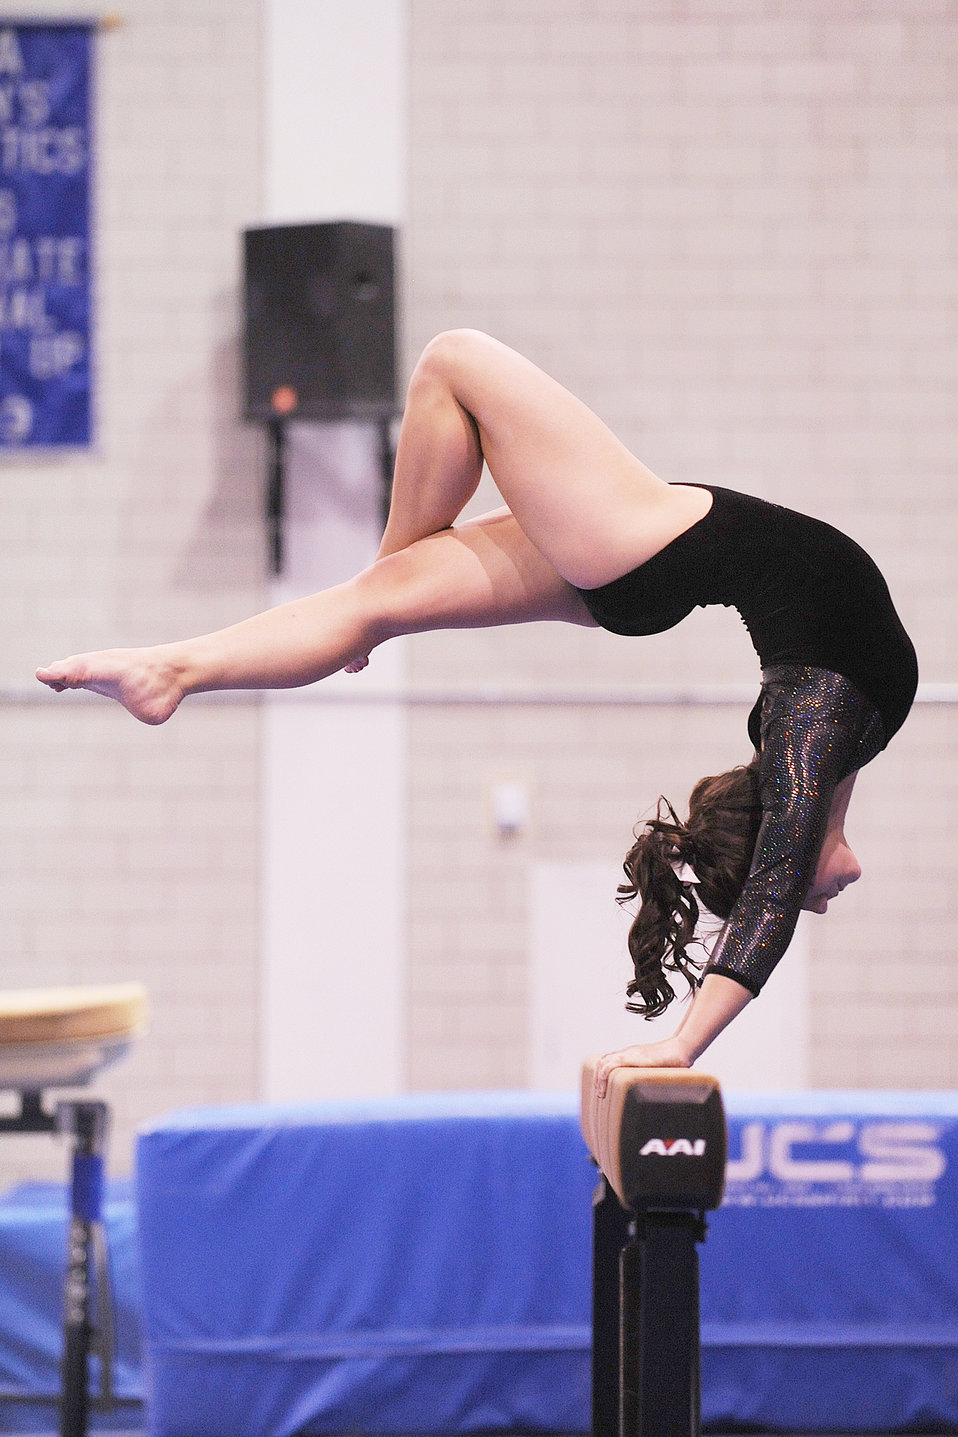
A gymnast on a balance beam

Air Force Academy freshman Britany Calley competes on the balance beam during the second annual Blue-Silver Invitational at the Cadet West Gym Dec. 5, 2009.